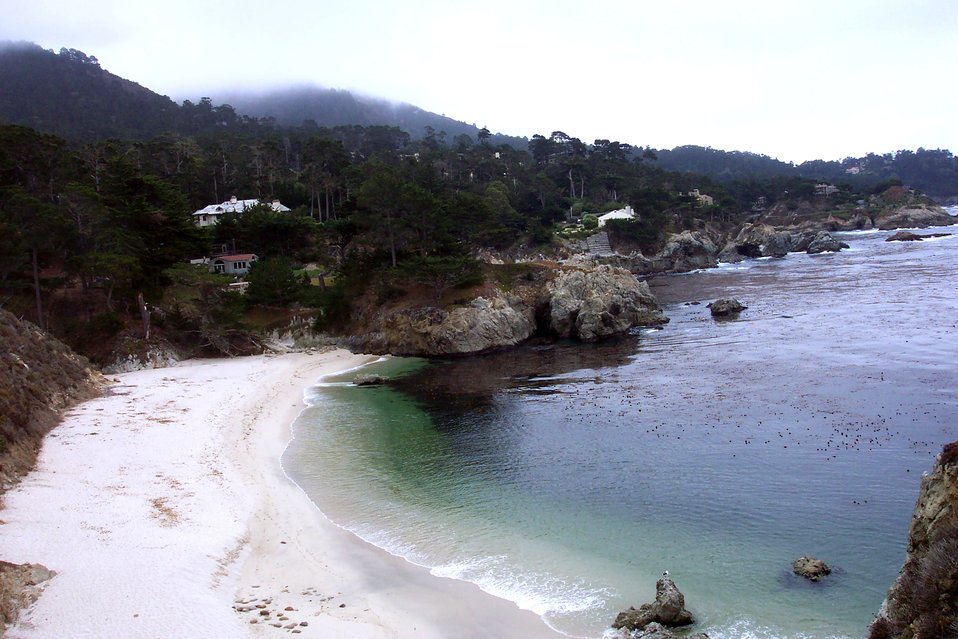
Gibson Beach at the south end of Point Lobos State Reserve.